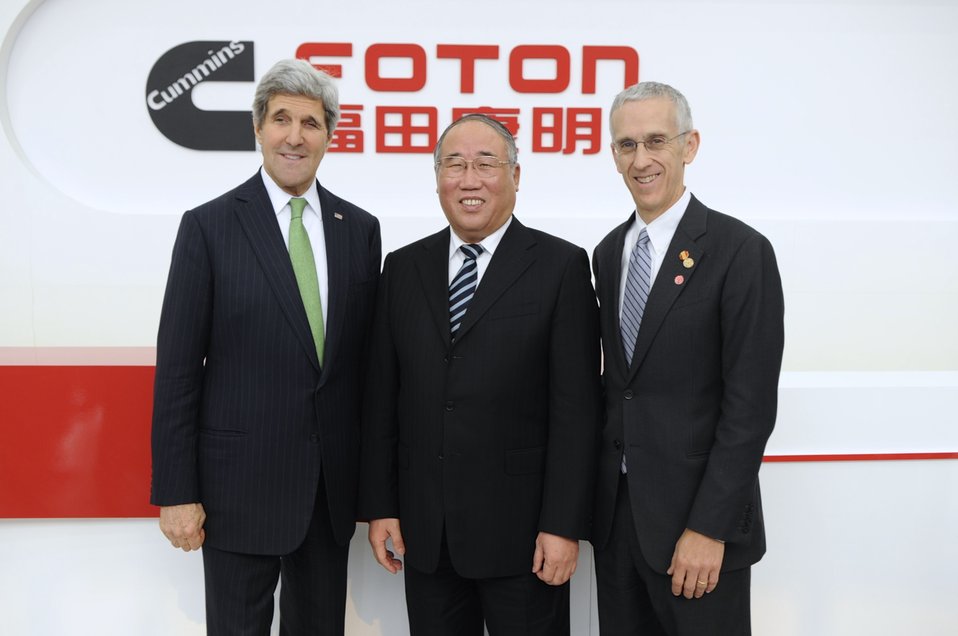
Secretary Kerry Poses With Chinese National Development Vice Chairman Xie and Special Envoy Stern

U.S. Secretary of State John Kerry and U.S. Special Envoy for Climate Change Todd Stern pose for a photo with Chinese National Development and Reform Commission Vice Chairman Xie Zhenhua after touring a clean-diesel engine assembly line at the Cummins-Foton Joint Venture Plant in Beijing, China on February 15, 2014.